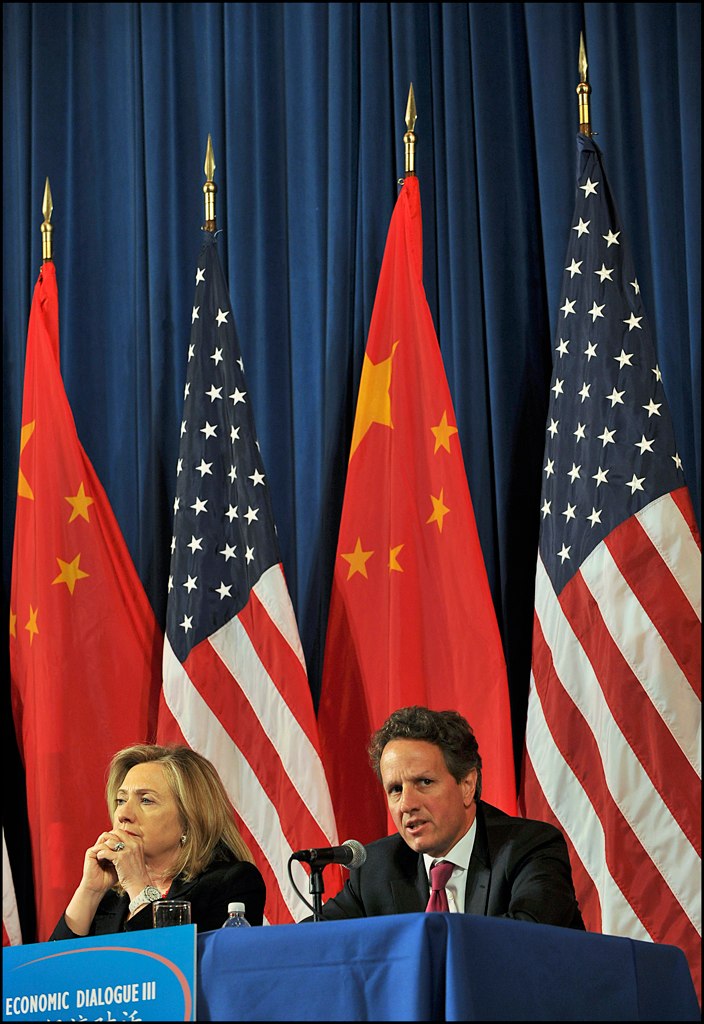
U.S.-China Strategic and Economic Dialogue concluded on Tuesday with statements from Secretary Clinton, Secretary Geithner and their counterparts.